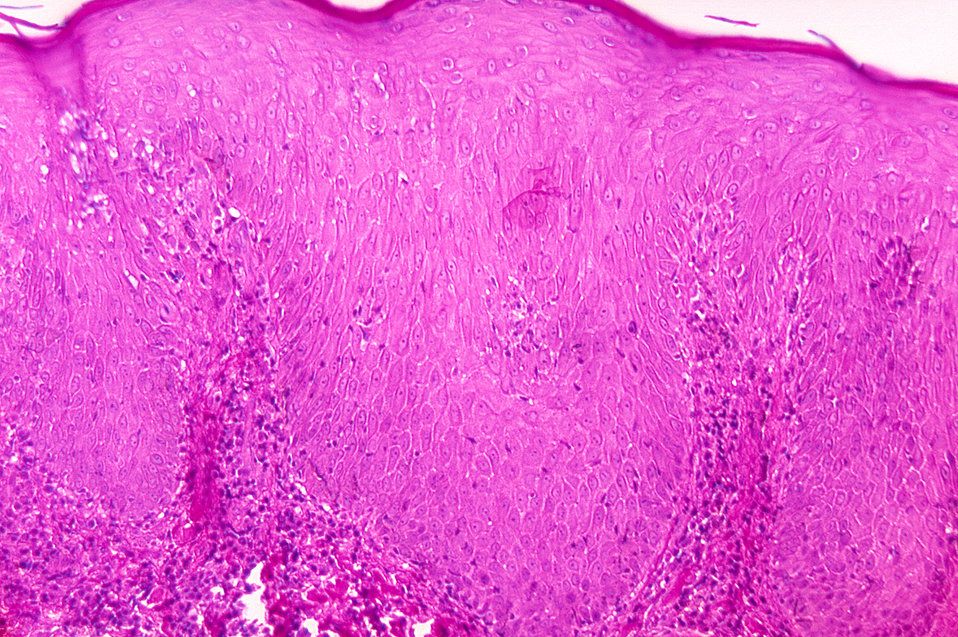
A photomicrograph depicting the histopathology of pinta from the skin of a chimpanzee.